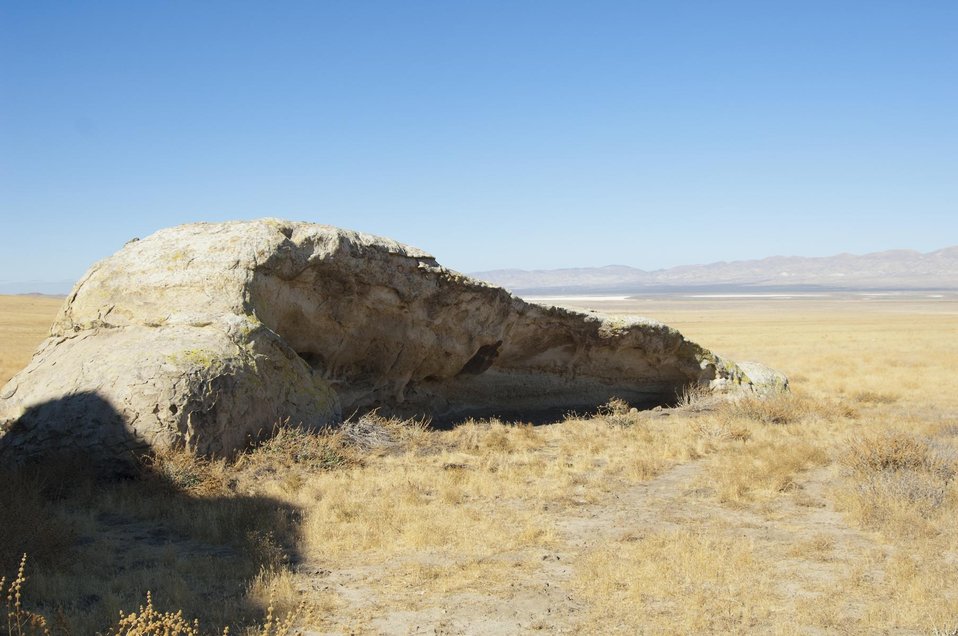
Painted Rock, Formation on the Carrizo Plain 6